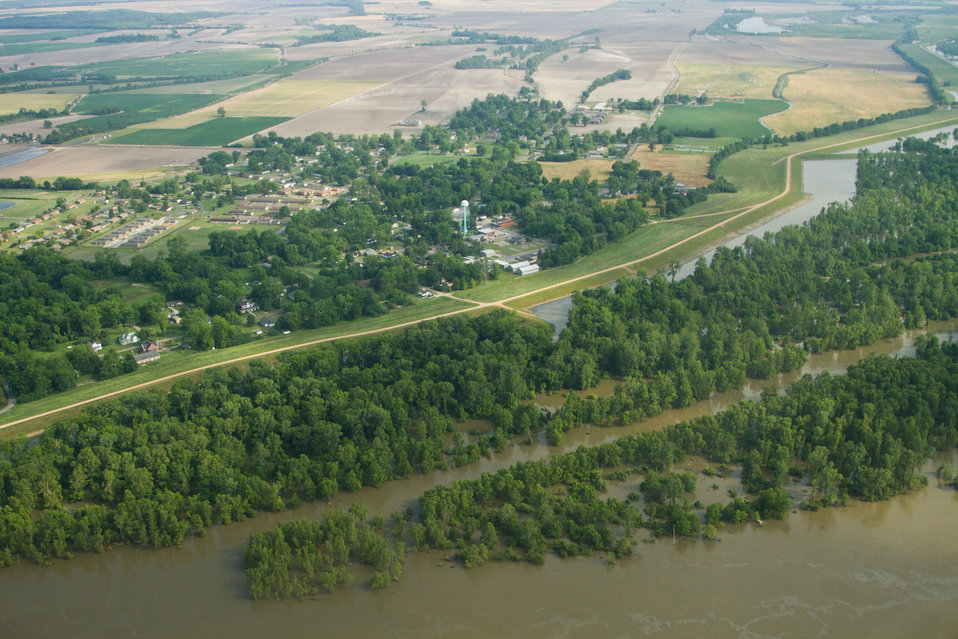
Aerial view of Mississippi River flood of farms, wilderness, and populated areas, on Thursday, May 19, 2011. from the MS side. Aerial platform was a UH-60 Blackhawk commanded by Col. Kennedy and his flight crew from the Army Aviation Support Facility #1 at Hawkins Field in Jackson, MS.